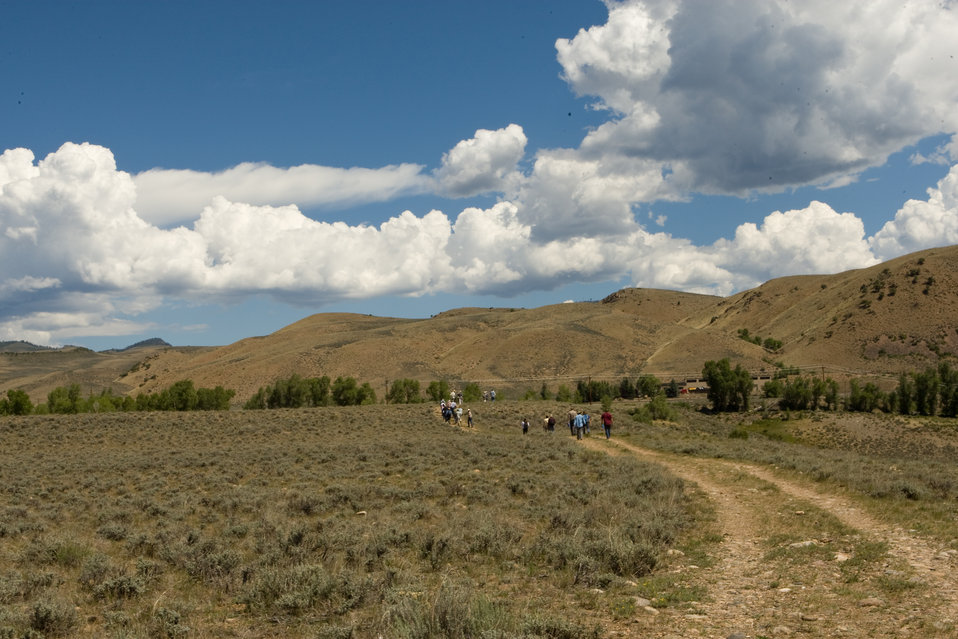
Colorado Rare Plant Conservation Initiative

The Colorado Rare Plant Conservation Initiative (RPCI) is a partnership of 23 statewide and regional agencies, private organizations, and academic institutions working to conserve 121 rare plants in Colorado. As part of these efforts the group developed the Colorado Rare Plant Conservation Strategy, developed Best Management Practices to reduce energy development impacts, addressed climate change, and developed focused strategies for the conservation of individual species at eight priority landscapes. The group has also worked to coordinate volunteer efforts for plant conservation across the state.